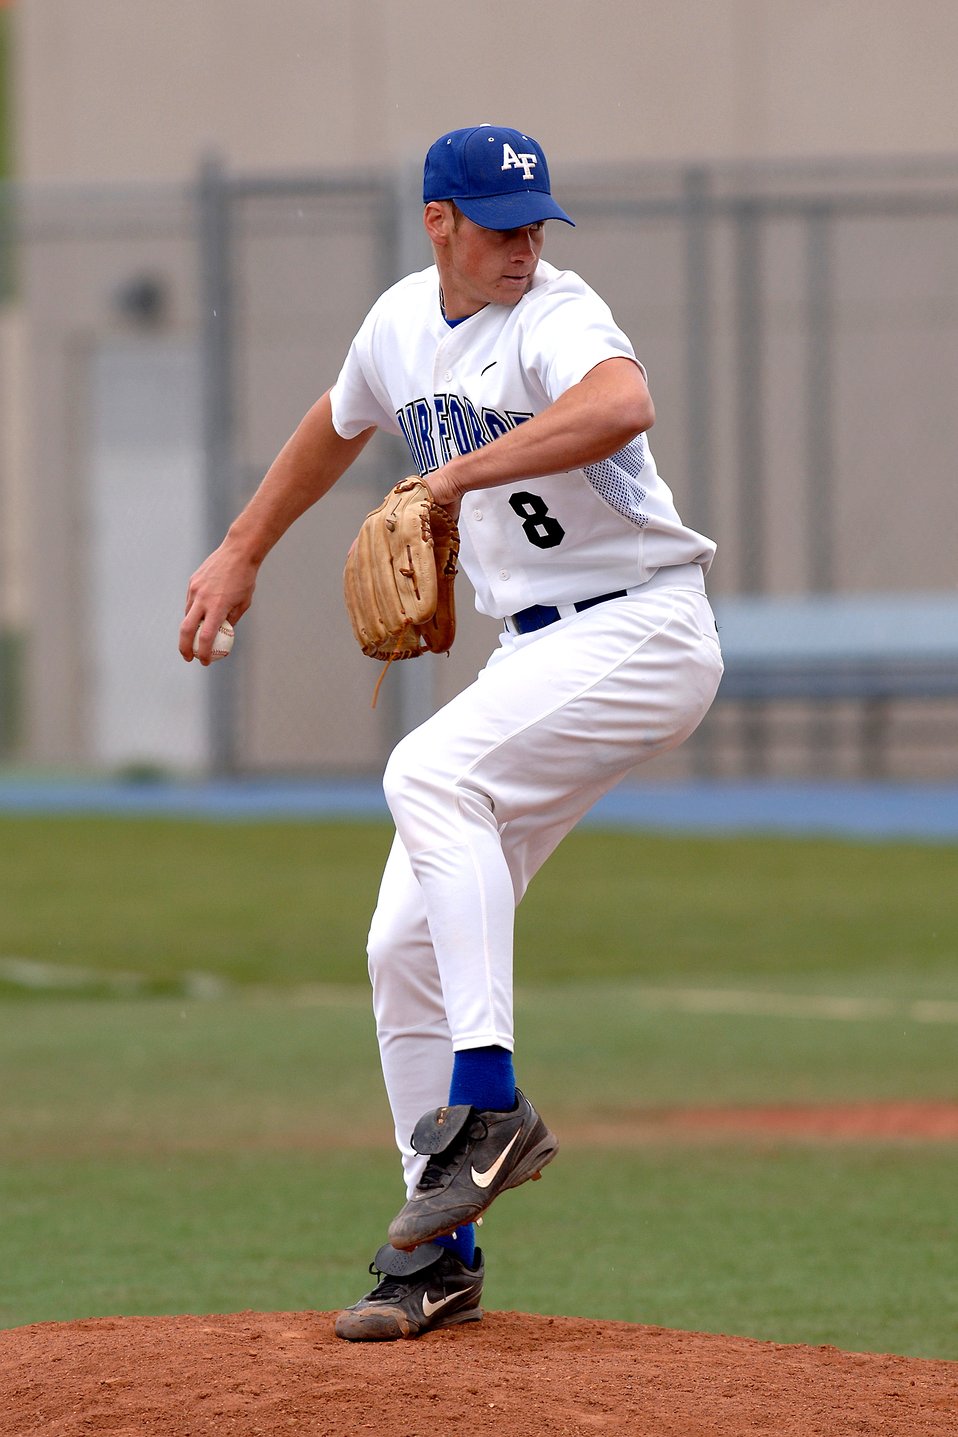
Academy baseball player takes ESPN magazine honors

Air Force Academy sophomore Josh Meents was named to the ESPN The Magazine District VII Academic All-District Baseball Team. Meents, an operations research major who has a 3.33 grade-point average, leads the Falcons with seven homeruns and 25 RBIs.